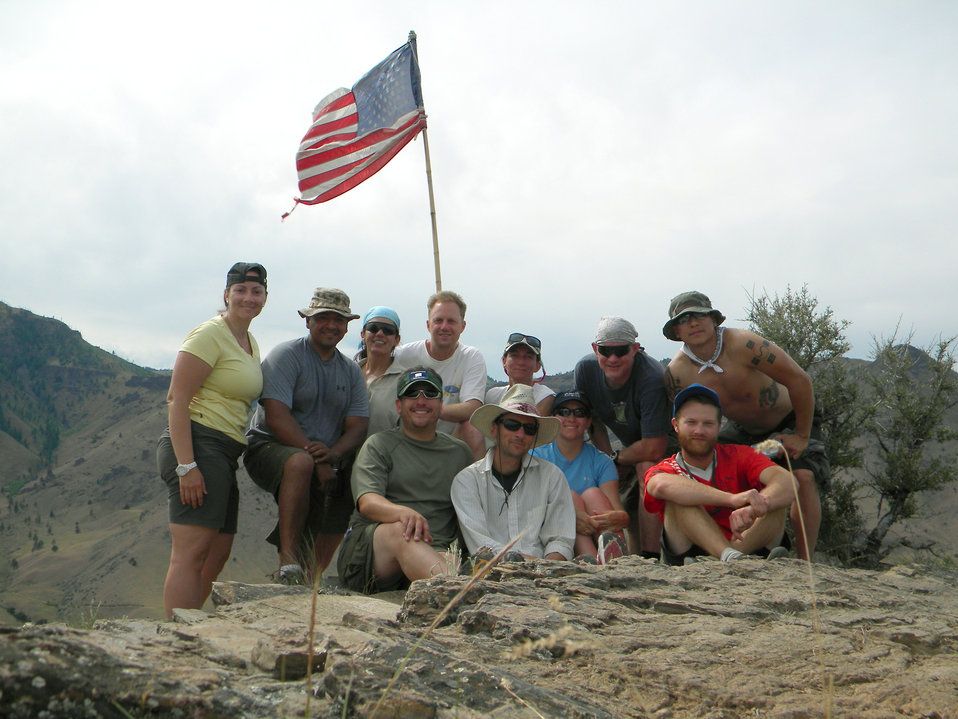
Veterans Outward Bound expedition

Students attended a free Outward Bound whitewater rafting expedition June 6 tthrough 10, 2010, on the Lower Deschutes River, Ore. Back row, left to right: Army Maj. Lori D. Renwick, Sgt. Maj. of the Marine Corps James M. Betancourt, Staff Sgt. Stephanie J. Riotte, Navy Command Master Chief Michael P. Dyer; Navy Petty Officer 1st Class Lillian Diehl, Navy Petty Officer 2nd Class Scott A. Fessenden and Shawn Lee. First row, left to right: Josaf Rodriguez, Justin Russell, Capt. Rebecca A. Garcia, and Jeff Weaver.